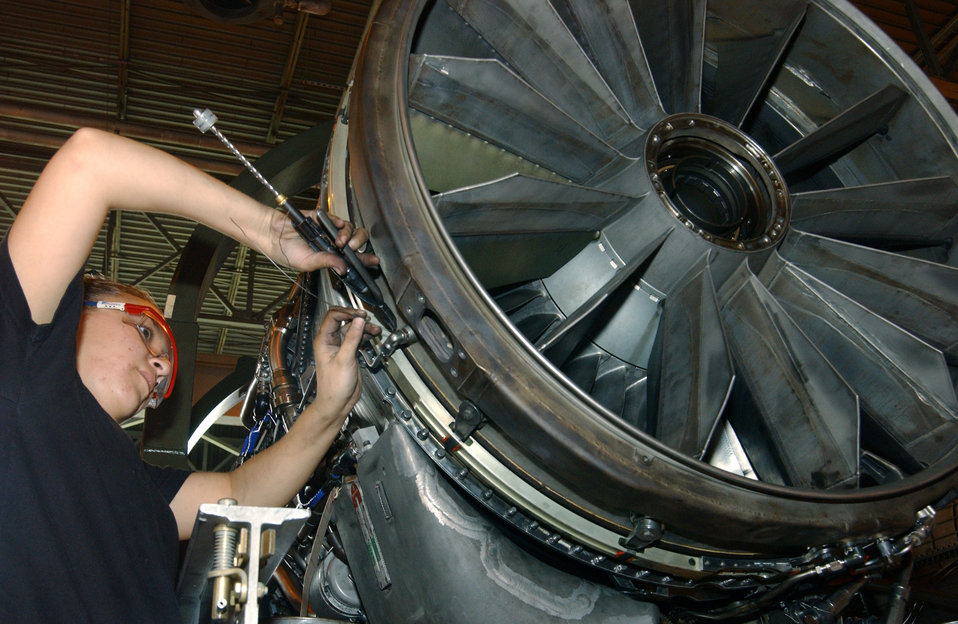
Getting the job done

SHAW AIR FORCE BASE, S.C. -- Airman 1st Class Aurelia Garza safety wires an F110 engine here Aug. 31. Airman Garza is assigned to the 20th Maintenance Group.